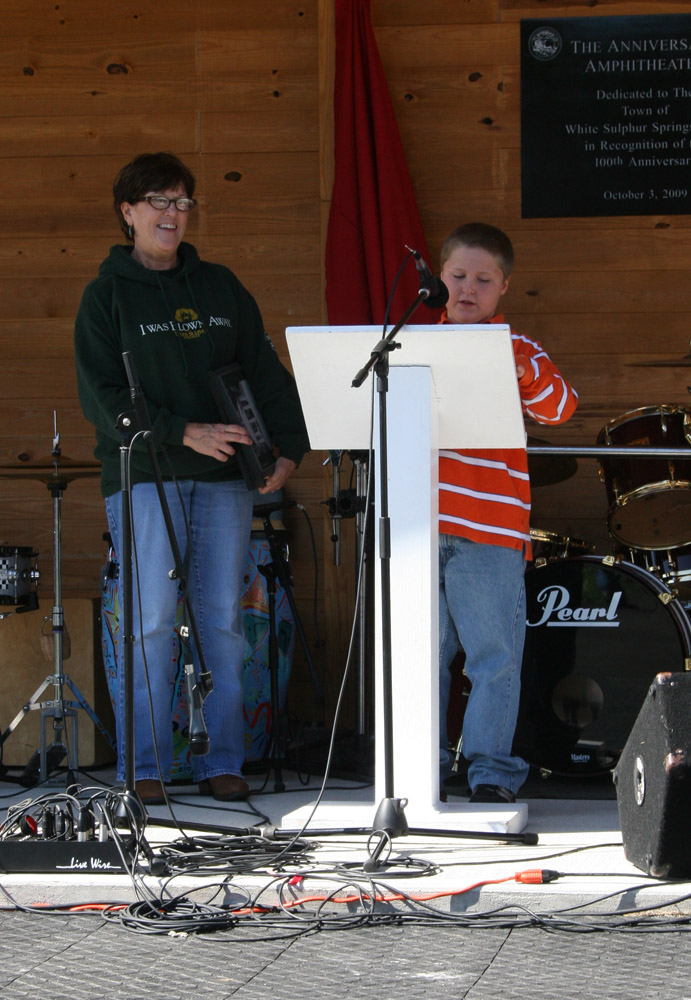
Freshwater Folk Festival

The 5th Annual Freshwater Folk Festival at White Sulphur Springs National Fish Hatchery in West Virginia.Credit: USFWS